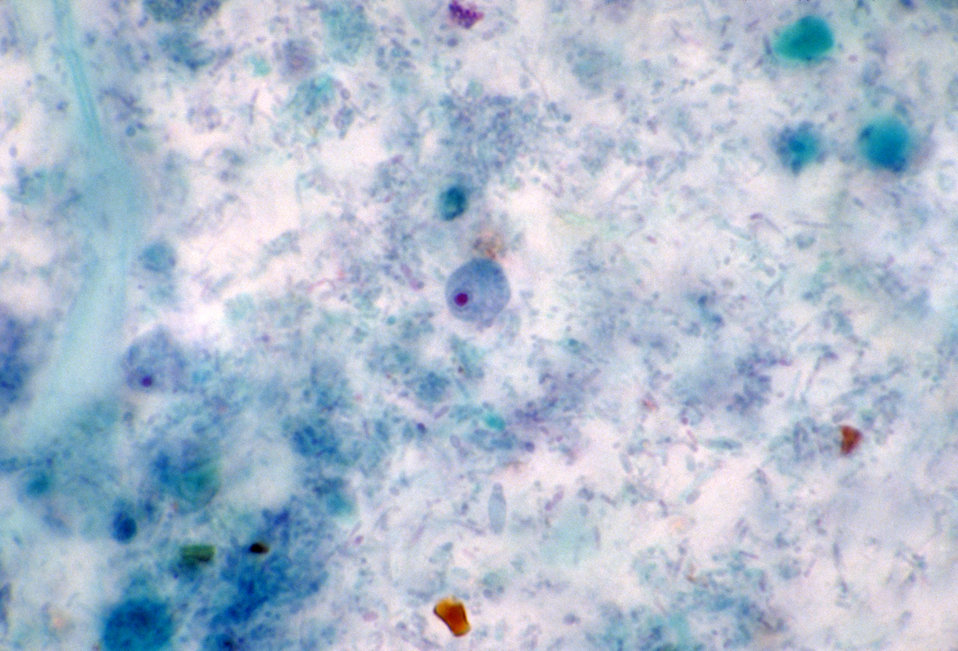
This photomicrograph depicts an amoebic parasite,Endolimax nana, trophozoite